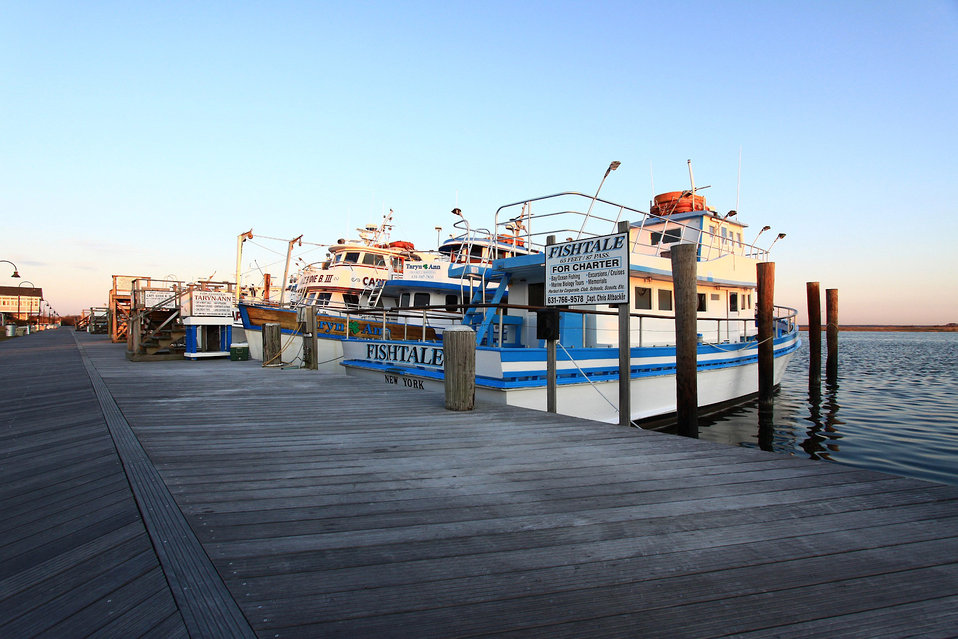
For charter

Fishing or cruise boats for charter.